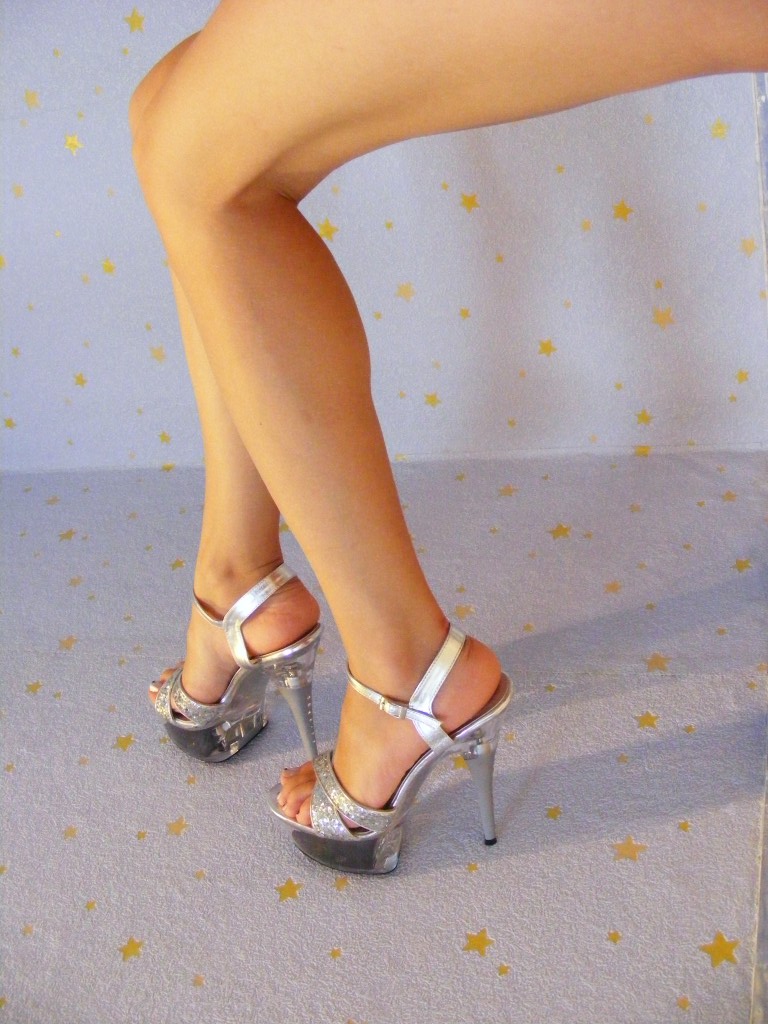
Sexy-Legs-With-High-Heels